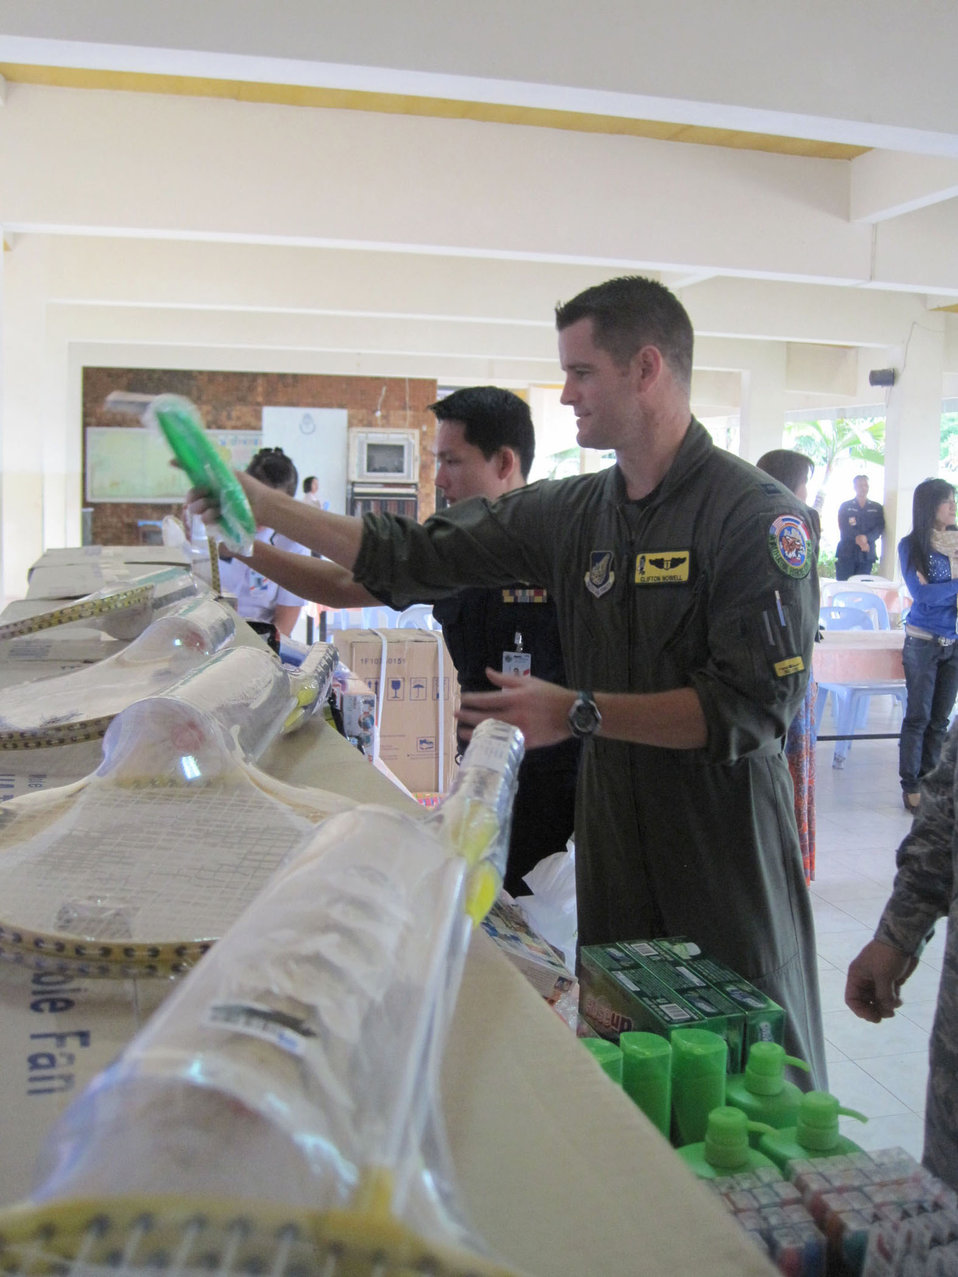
Cope Tiger 2011

Airmen set up donations for school children during a community outreach event March 18, 2011, in Korat, Thailand. The airmen are participating in Exercise Cope Tiger 2011, an annual, multilateral, joint field training exercise being conducted at Korat and Udon Thani Royal Thai Air Bases March 14 through 25.